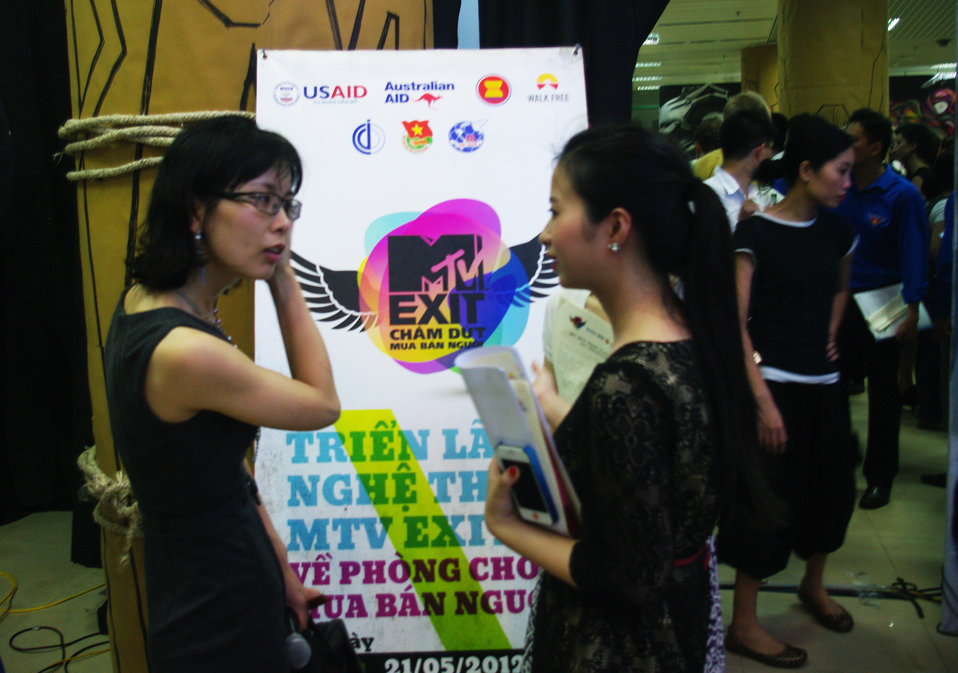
MTV EXIT opens Youth Forum in Hanoi